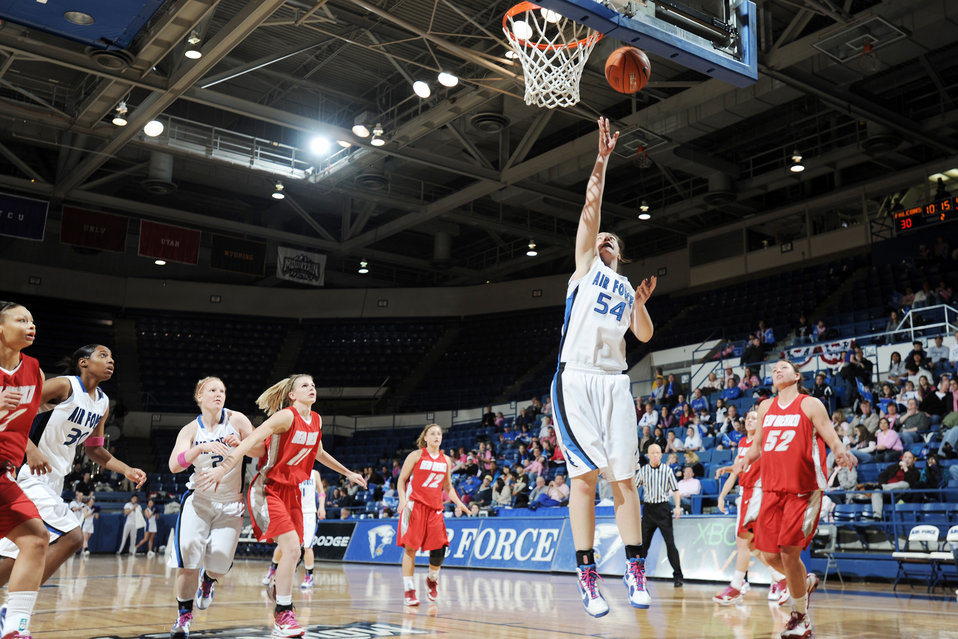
Photo essay: Academy women?s basketball falls to New Mexico

U.S. Air Force Academy junior center Liz Dunsworth goes up for two against the University of New Mexico Feb. 20, 2010, at Clune Arena in Colorado Springs, Colo. The Falcons lost 65-46.